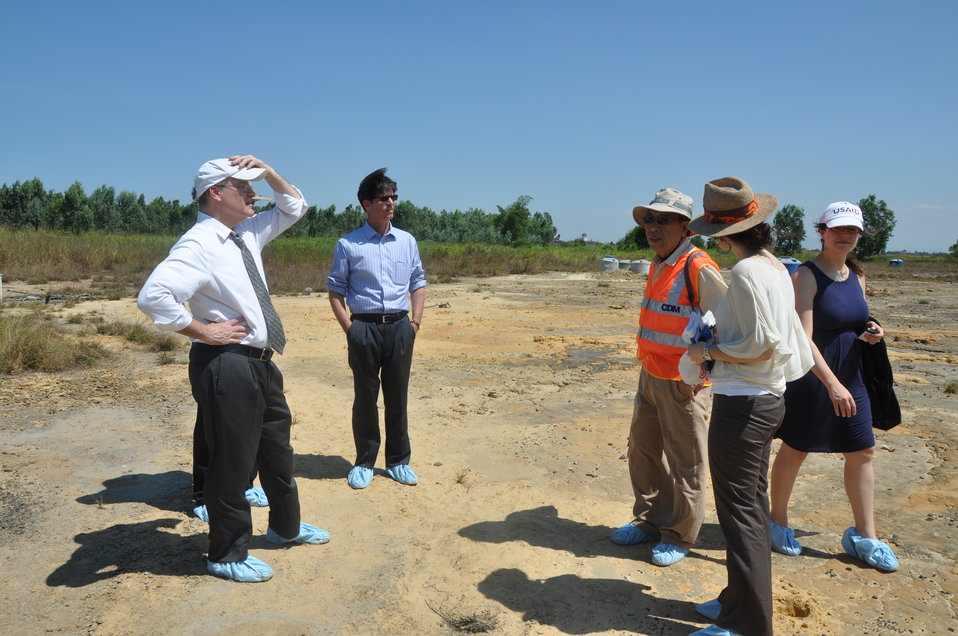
USAID Deputy Administrator Donald Steinberg and delegation visit Danang Airport

USAID Deputy Administrator Donald Steinberg Visits Vietnam